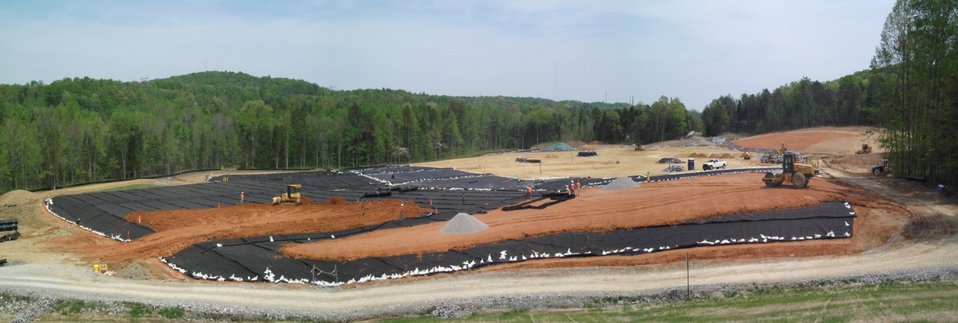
Protective layers are installed at Oak Ridge’s Bethel Valley Burial Grounds. The enhancements further isolate waste and protect the underlying watershed.